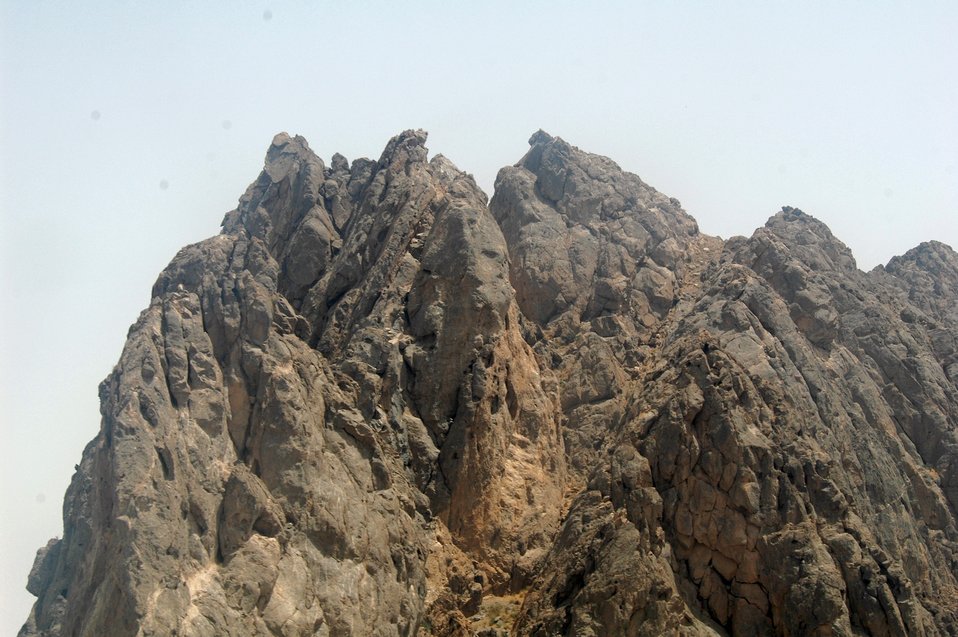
CODEL Berman